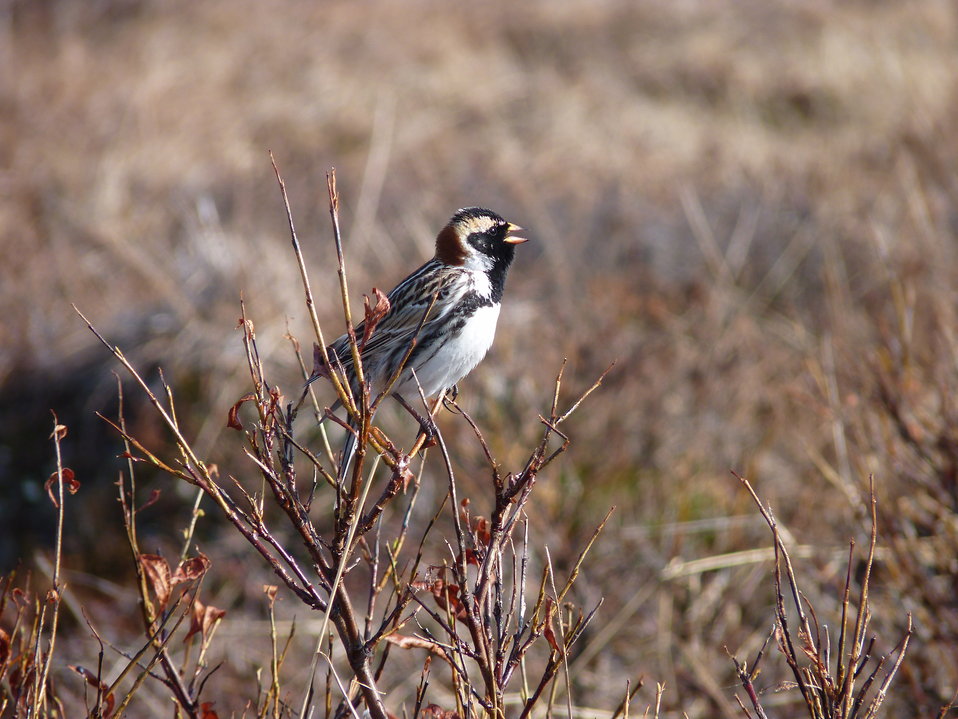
Lapland longspur male

Andreafsky wilderness, Yukon Delta National Wildlife Refuge